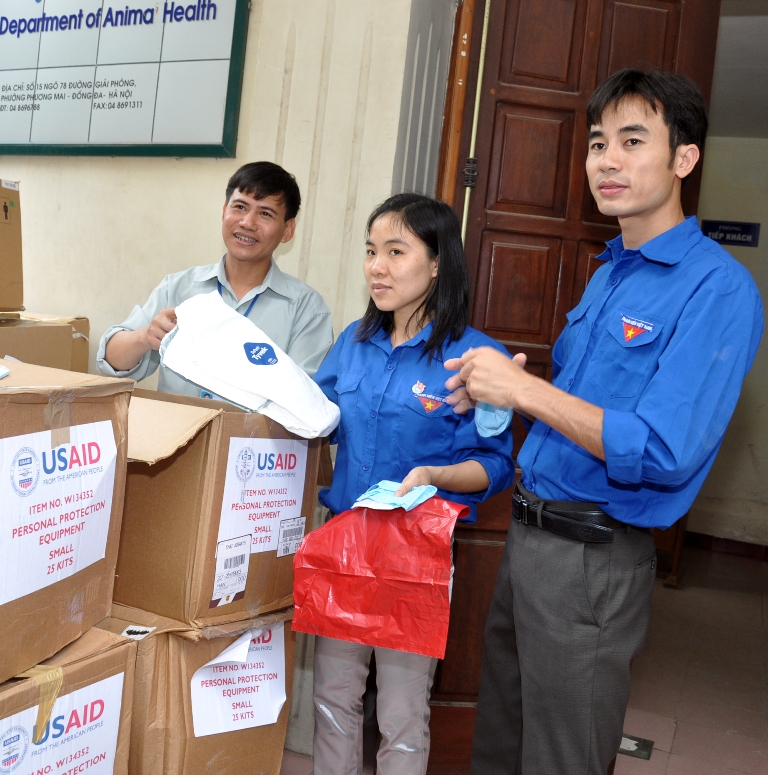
USAID fights infection and the spread of animal and pandemic influenza in Vietnam.

USAID supports Vietnamese animal and human health workers with masks, protective suits, and disinfectant to help combat bird flu and other diseases.